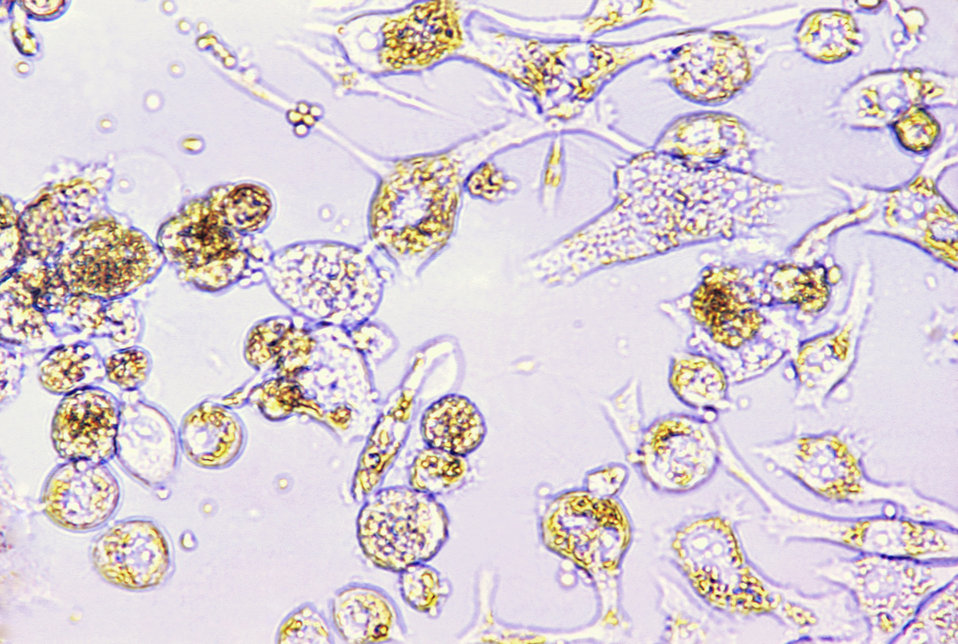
HeLa cell monolayer culture infected with Trypanosoma cruzi. Parasite.